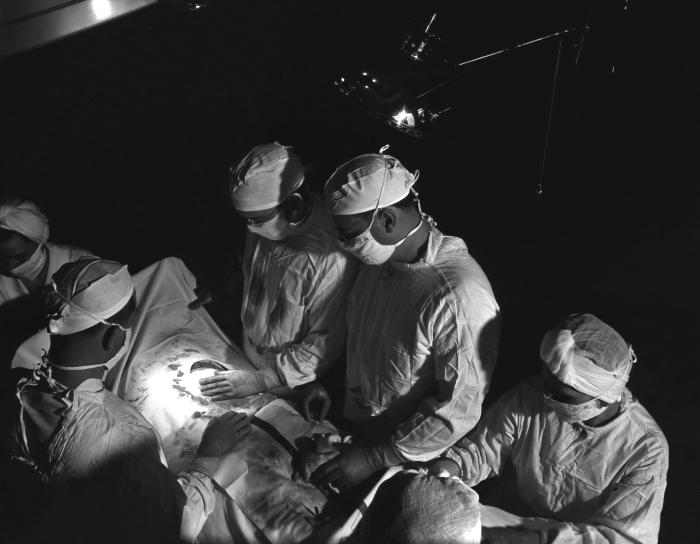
This 1950s historical photograph was provided by the Center for Disease Control's (CDC), National Institute for Occupational Safety and Health (NIOSH). It depicted the inside of an operating room suite during a surgical procedure. Following sterile protocol, the surgeons and nurses were all appropriately dressed in sterile garments consisting of head coverings, gloves, and surgical robes, which are all still worn to this day, though constructed of more complex materials that implement synthetics such as hypoallergenic polyesters.